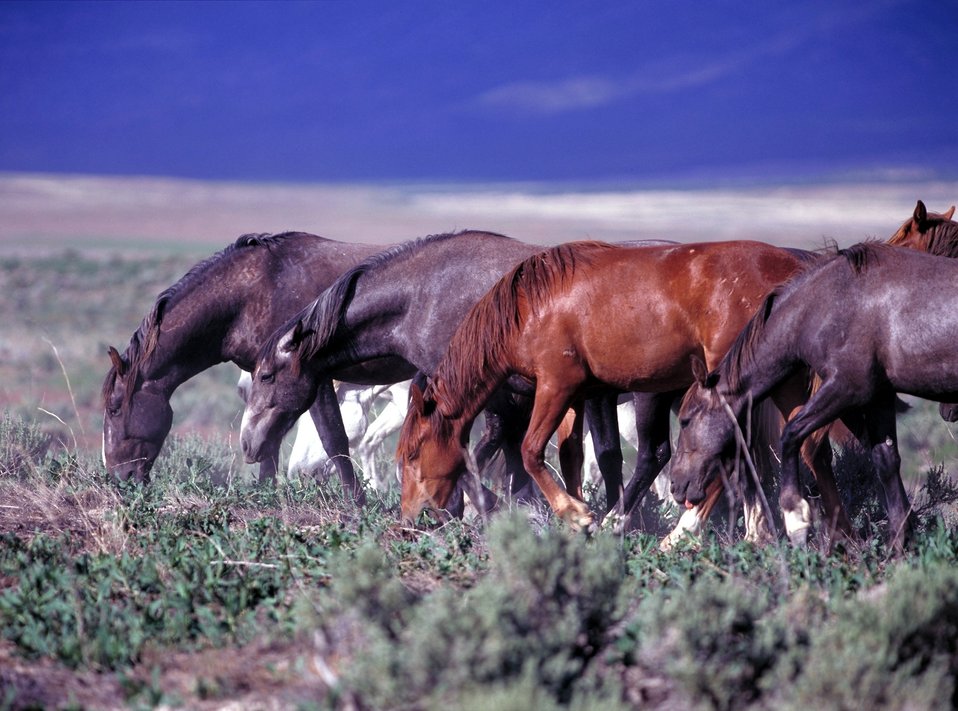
Onaqui Herd near Dugway, Utah.